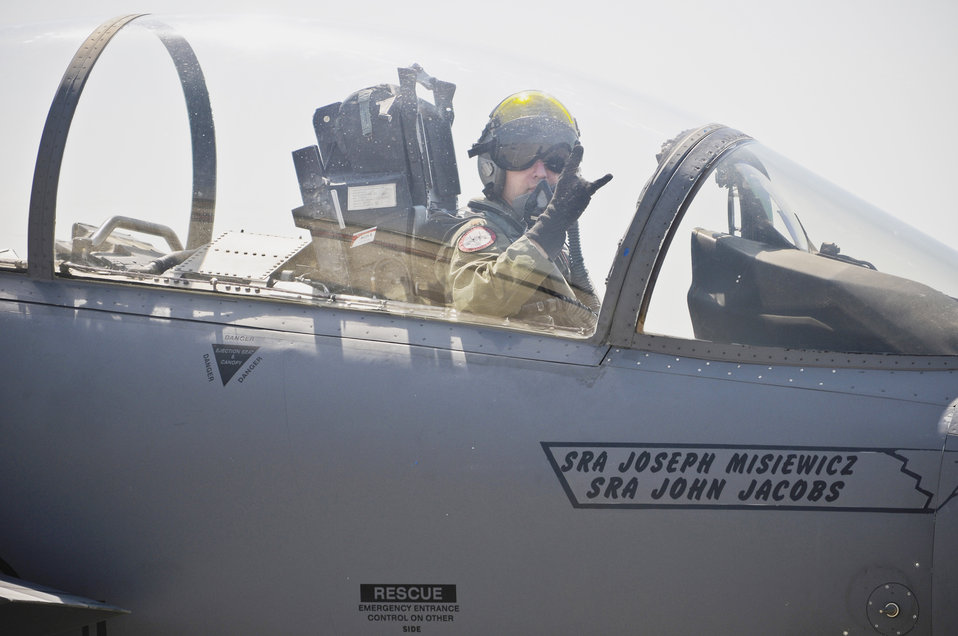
Strike Eagle, Fighting Falcon 'thunder' over Kentucky

Maj. Gregory F. Craven taxies his F-15E Strike Eagle onto the flightline at the Kentucky Air National Guard Base in Louisville, Ky., April 15, 2010. Major Craven and the Strike Eagle Demo Team are in Louisville to participate in the Thunder Over Louisville air show. He is a pilot assigned to the 4th Fighter Wing at Seymour Johnson Air Force Base, N.C.